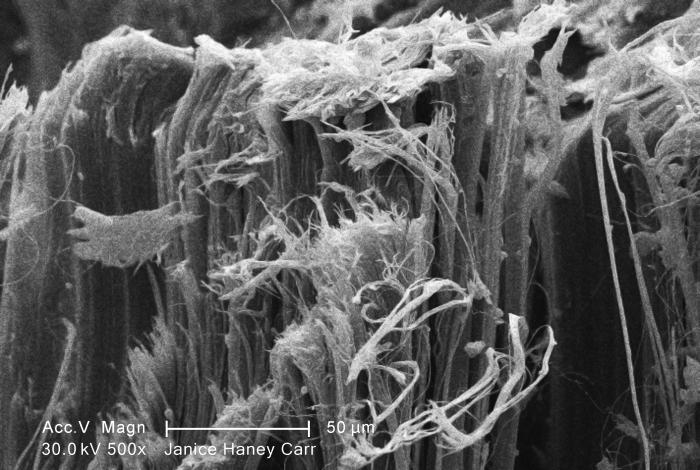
Under a moderate magnification of 500X, this scanning electron micrograph (SEM) revealed some of the microcrystalline ultrastructure exhibited by a piece of raw chrysotile, or white asbestos, which had been excavated from the Lowell Asbestos Mine on Belvidere Mountain, Vermont.